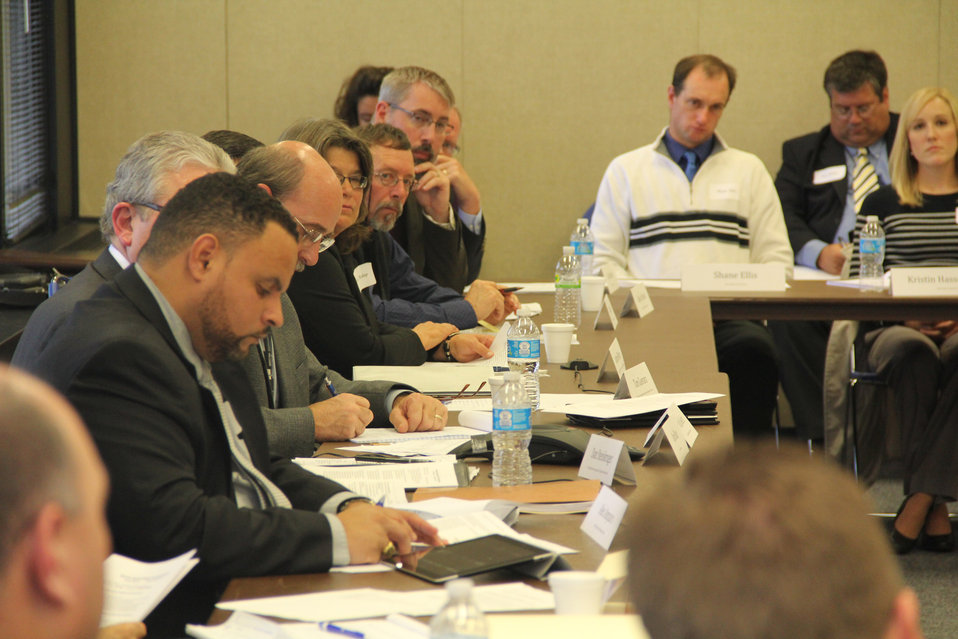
At a breakout session at the Federal Drought meeting in Omaha, NE panelists discuss ways livestock producers have been impacted by the drought on Tuesday, Oct. 9, 2012. The U.S. Department of Agriculture (USDA) is partnering with local, state and federal partners to hold the workshops, working closely with the Department of Commerce, the Small Business Administration and the Federal Emergency Management Agency to facilitate these meetings.